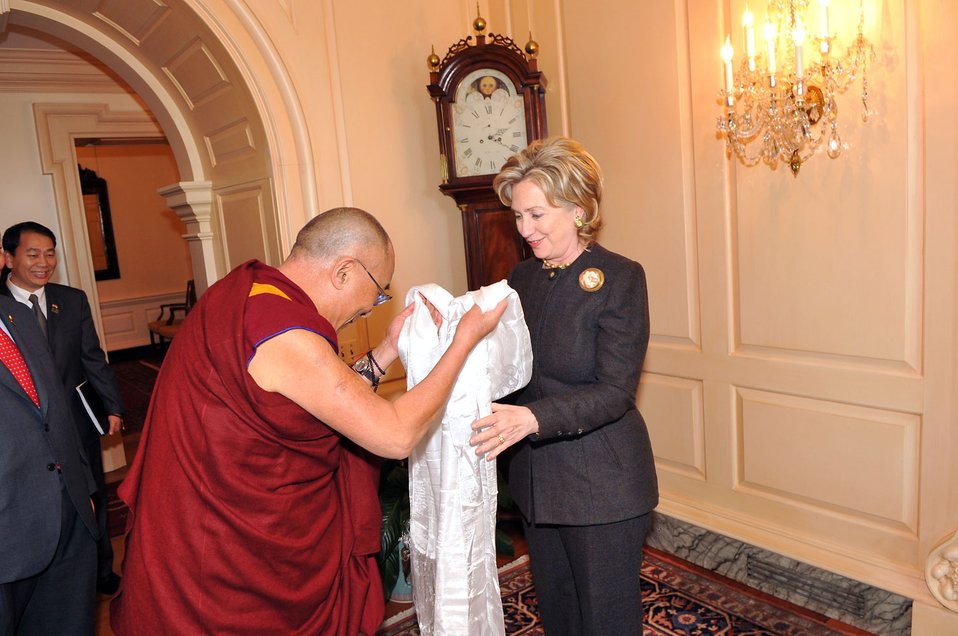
Secretary Clinton Meets With His Holiness the Dalai Lama

U.S. Secretary of State Hillary Rodham Clinton meets with His Holiness the Dalai Lama, at the Department of State in Washington, DC February 18, 2010.